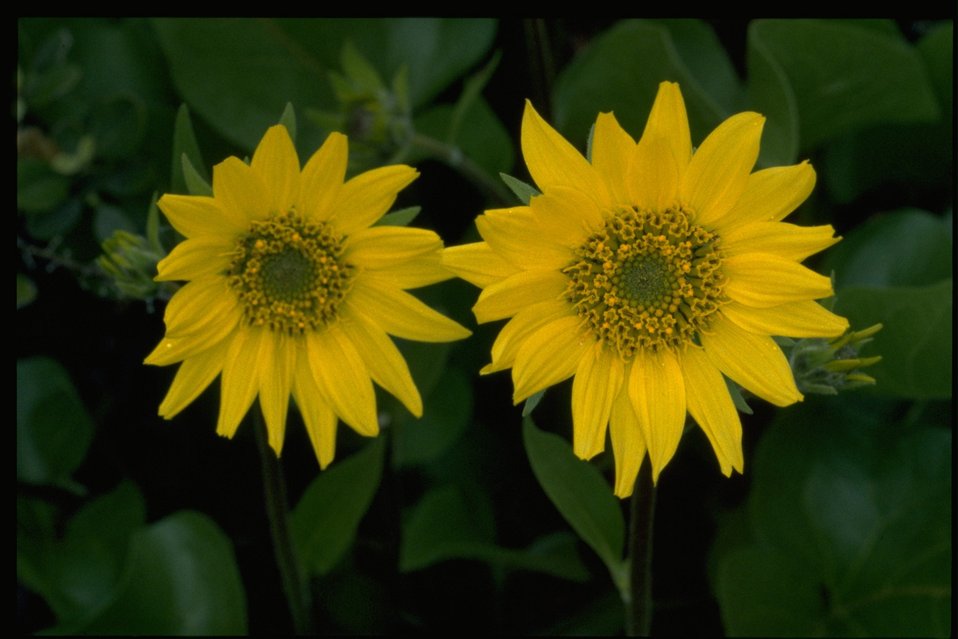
Closeup shot of wildflowers (genus Balsamorhiza).